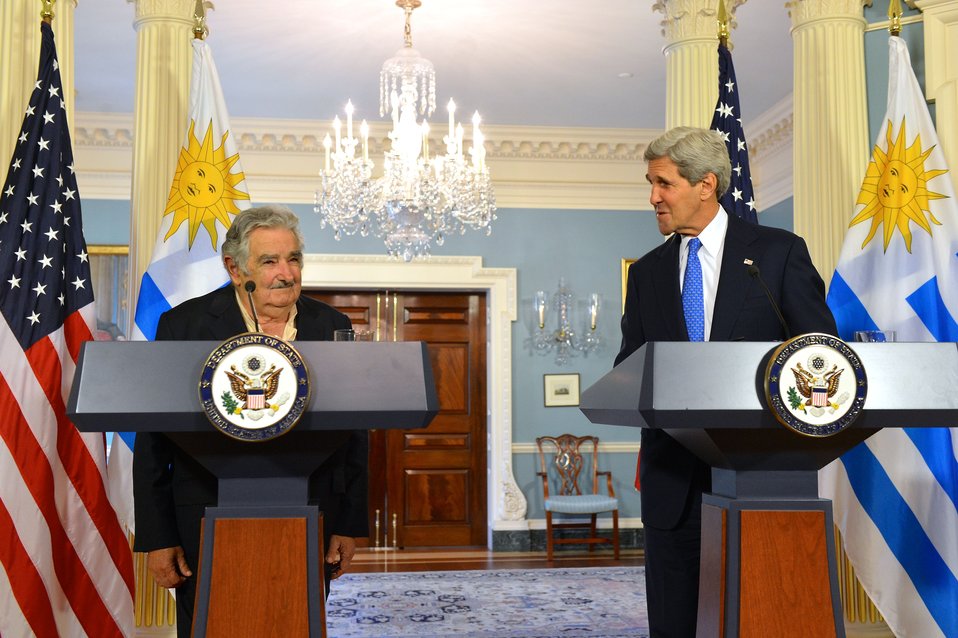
Secretary Kerry and Uruguayan President Mujica Address Reporters

U.S. Secretary of State John Kerry and Uruguayan President Jose Mujica address reporters before their bilateral meeting at the U.S. Department of State in Washington, D.C., on May 13, 2014.